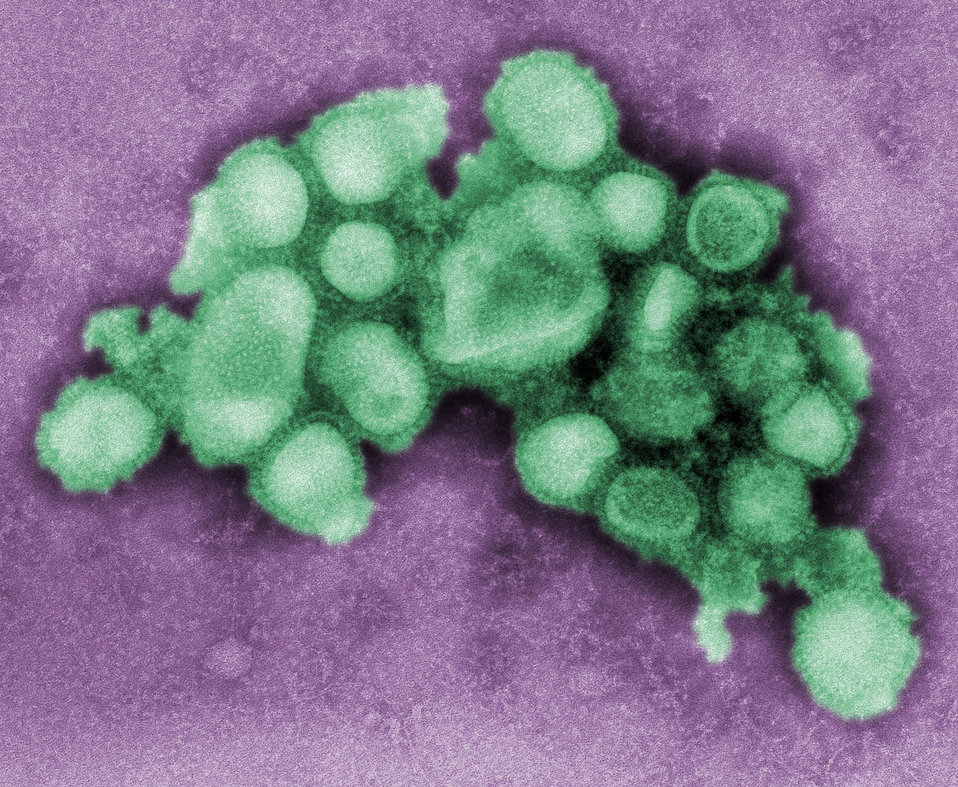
This colorized negative stained transmission electron micrograph (TEM) depicted some of the ultrastructural morphology of the A/CA/4/09 swine flu virus. See PHIL 11213 for a black and white version of this image.What is Swine Influenza?